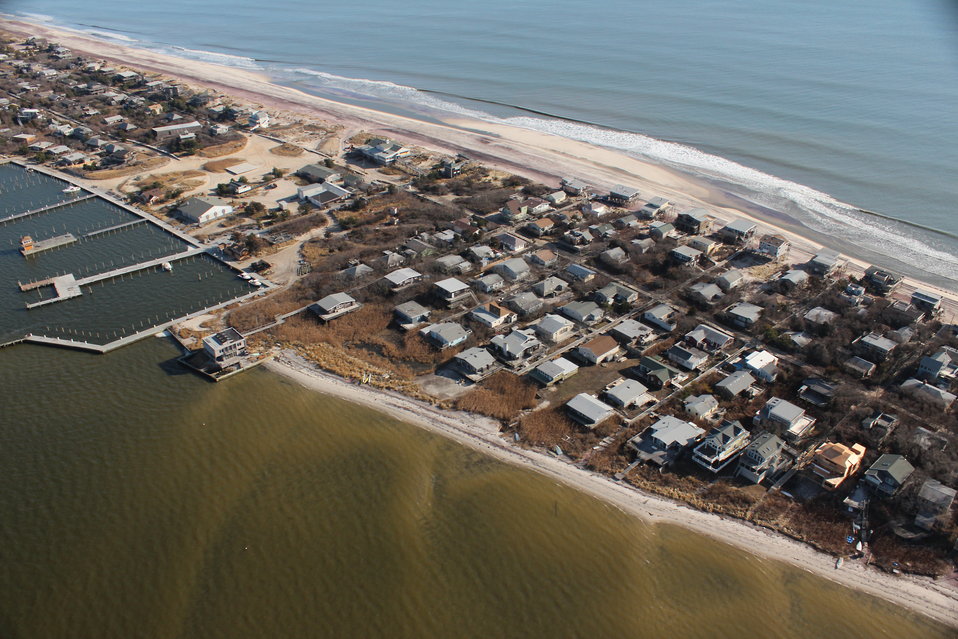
December 6, 2012 Section of Fire Island, New York

Fire Island ranged in damage from Hurricane Sandy. At the time when this photo was taken, this area appeared quiet with a bit of construction equipment handling the hardest hit sand streets.